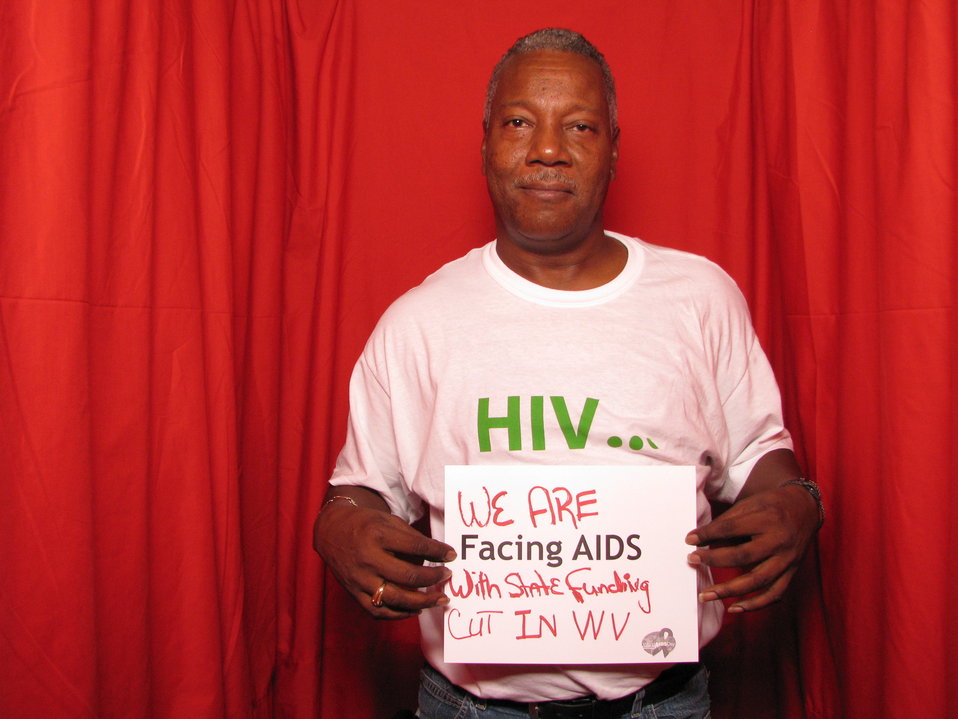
We are FACING AIDS with state funding cut in WV.

From the AIDS.gov photo booth at the U.S. Conference on AIDS, September 2010 (Orlando, FL).